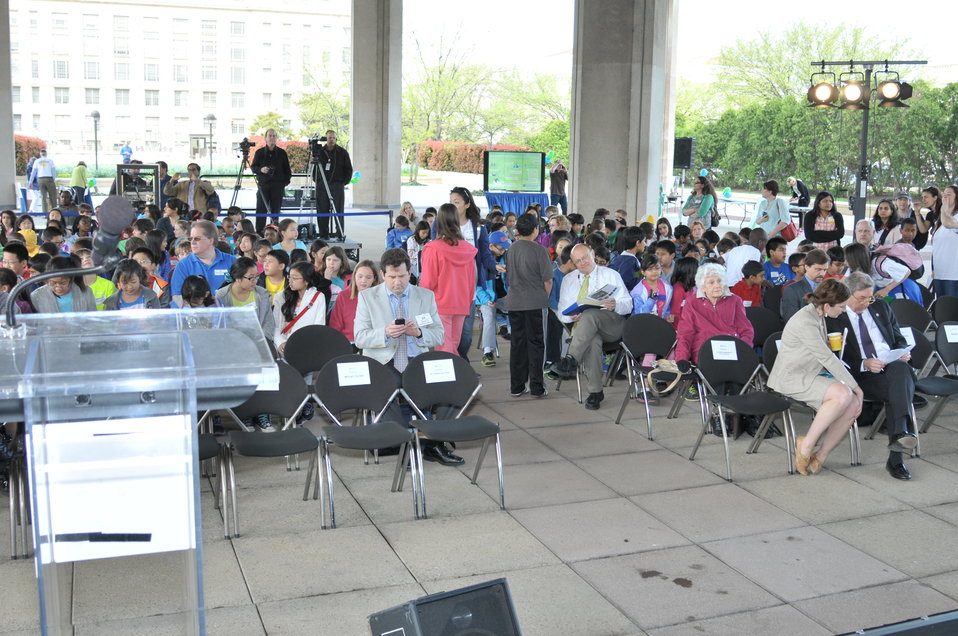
U.S Postal Services introduces a new Global: Sea Surface temperatures forever stamp at the Earth Day program at Department of Energy on April 22, 2014. ( DOE Deputy D.Poneman,T.Day, C.Williams, C.Anderson II, J.Colin Ph.D, Dr. K. Sullivan, K.Tobin Ph.D, W. Gicher Jr)